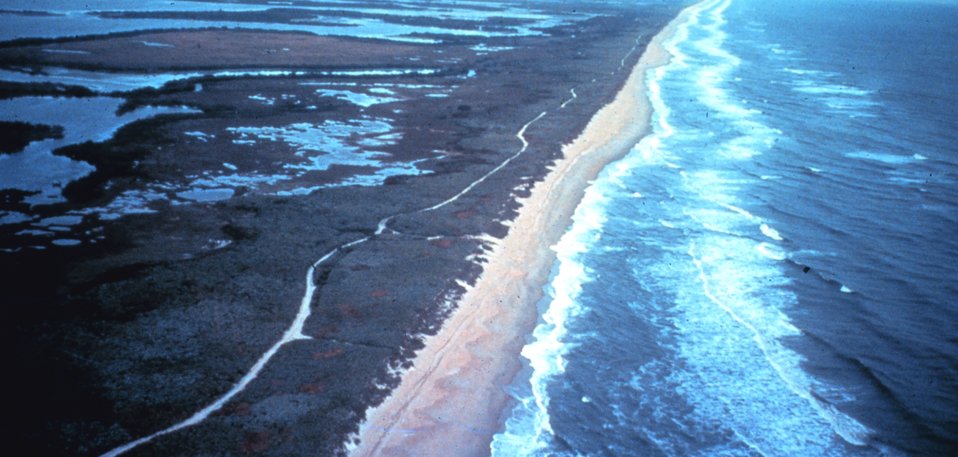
Canaveral National Seashore is located along Florida's Central East Coast. The park is situated on a barrier island. The park is 24 miles long and is 57,000 acres of ocean, beach, dune, lagoon, and pine flatlands habitat.